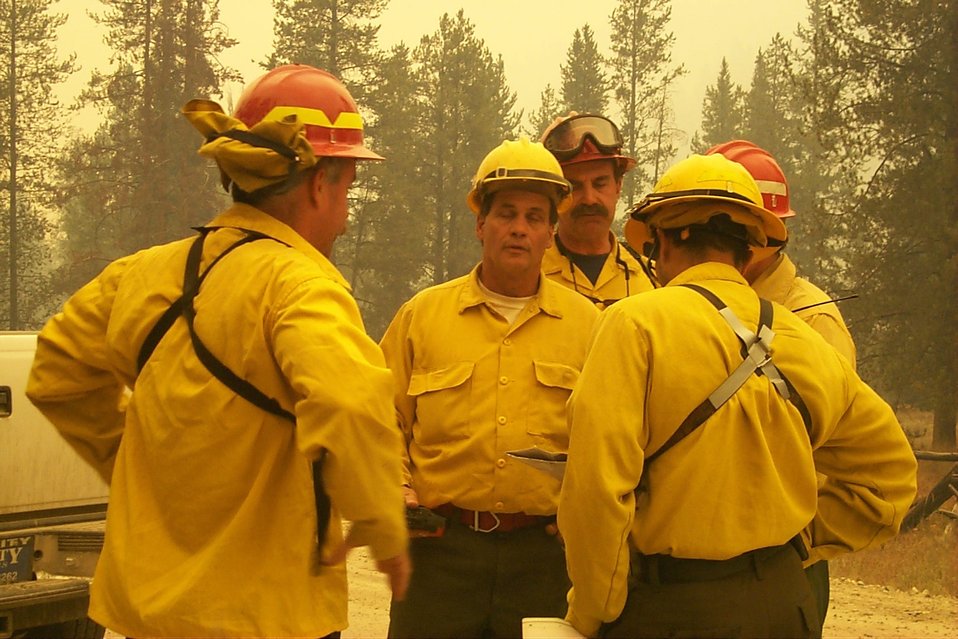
Fire crew Fire Clearwater Fire Salmon Field Office USRD Upper Snake River District